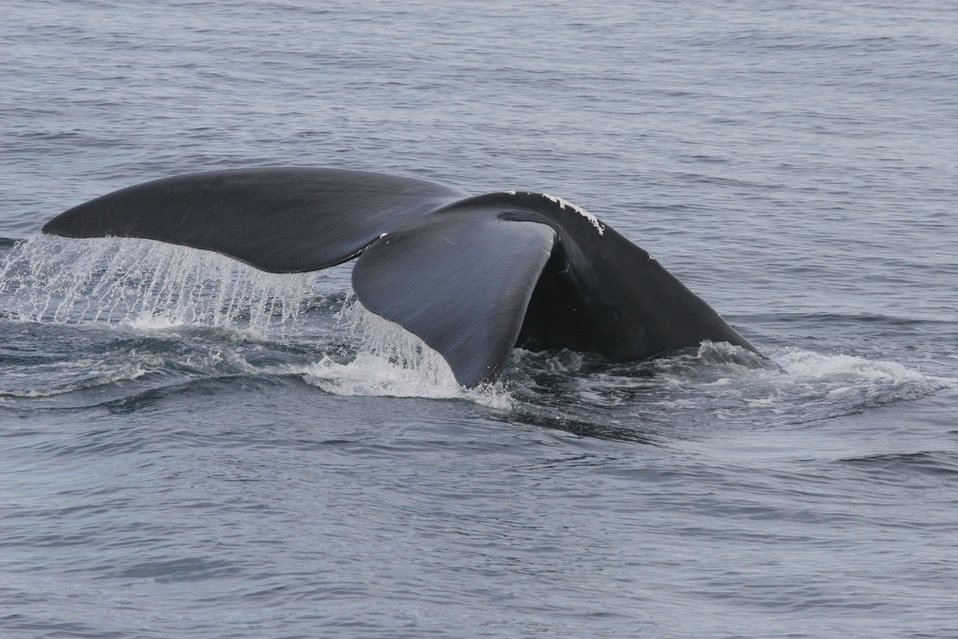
Whale flukes.